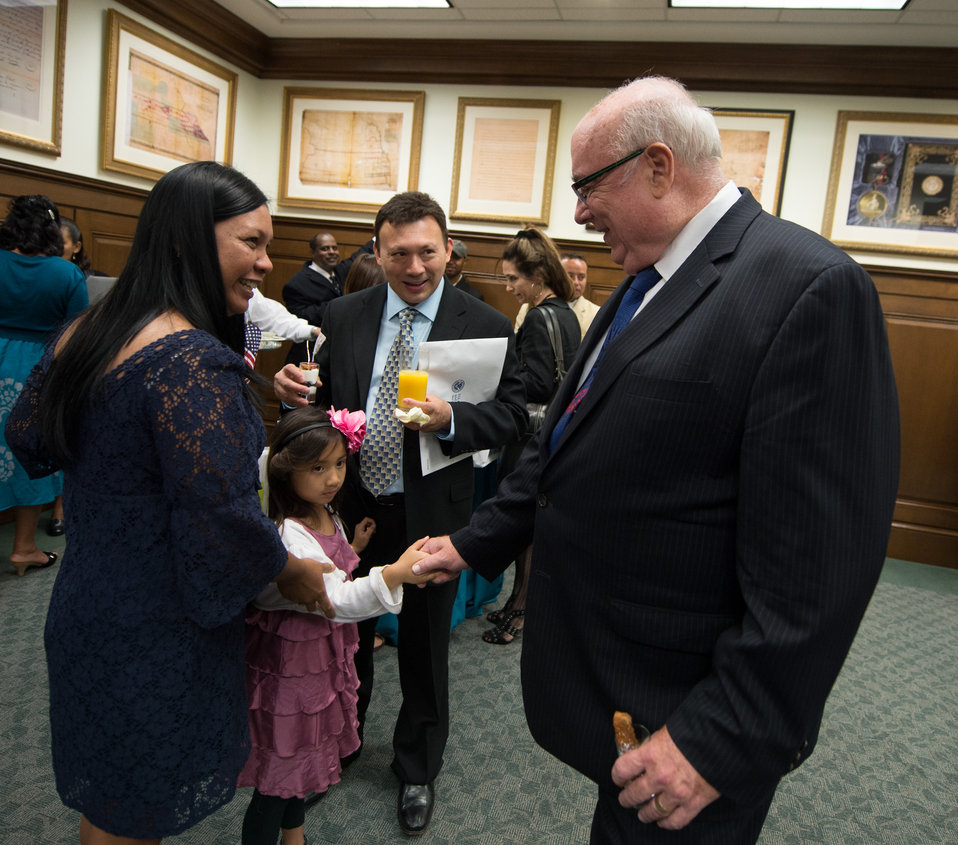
Constitution Day Naturalization Ceremony

The Honorable Royce Lamberth, United States District Court for the District of Columbia, meets the family of a new citizen